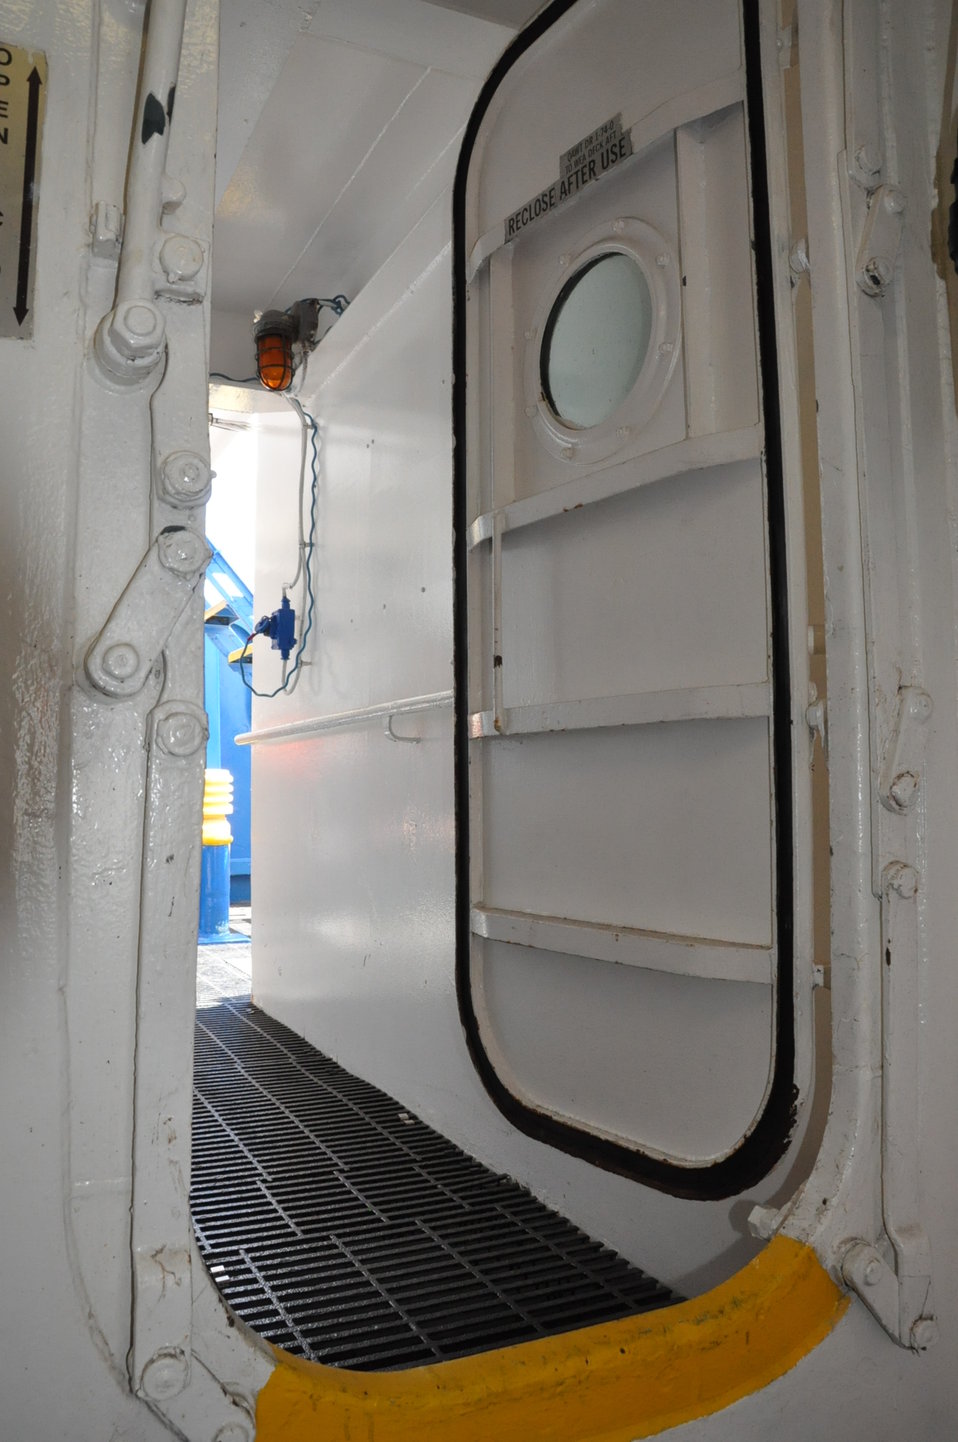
August 5, 2011 Getting accustomed to the ship again

You do not want to hit your shin on these doors... trust us.